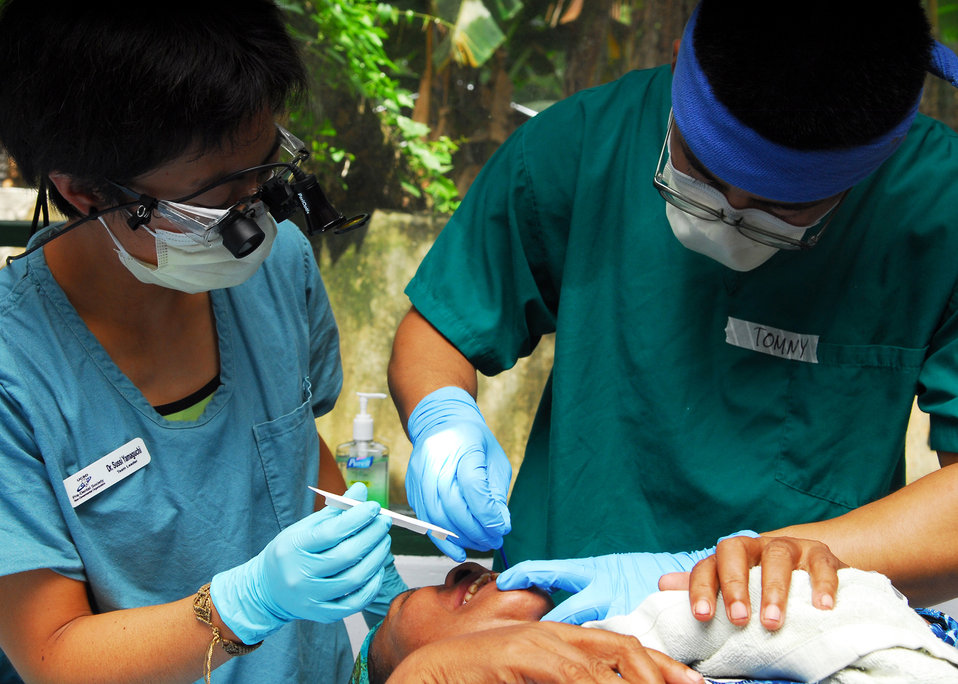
Dr. Yamaguchi Cleans a Patient’s Teeth

University of California, San Diego Pre-Dental Society dentist Dr. Sussi Yamaguchi cleans a patient’s teeth during a dental civic action program in Sulamadaha, Indonesia, on July 20, 2010. The Military Sealift Command hospital ship USNS Mercy (T-AH 19) is in the North Maluku Islands conducting Pacific Partnership 2010, the fifth in a series of annual U.S. Pacific Fleet endeavors conducted in Indonesia as a disaster relief exercise aimed at strengthening regional partnerships.